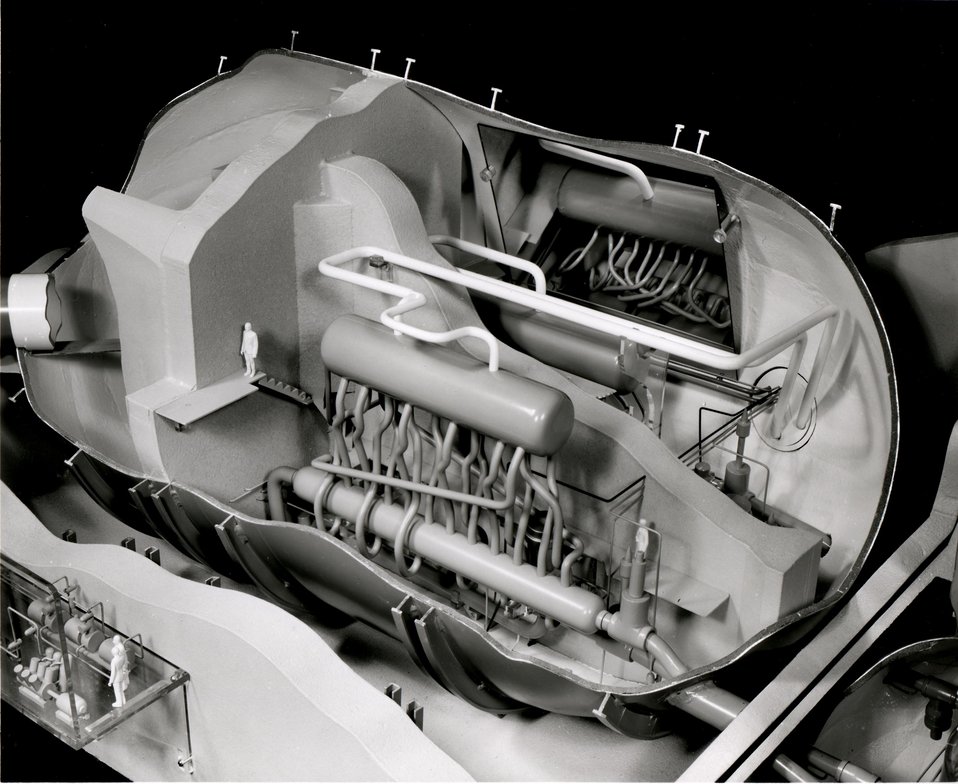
Shippingport model. c. undated